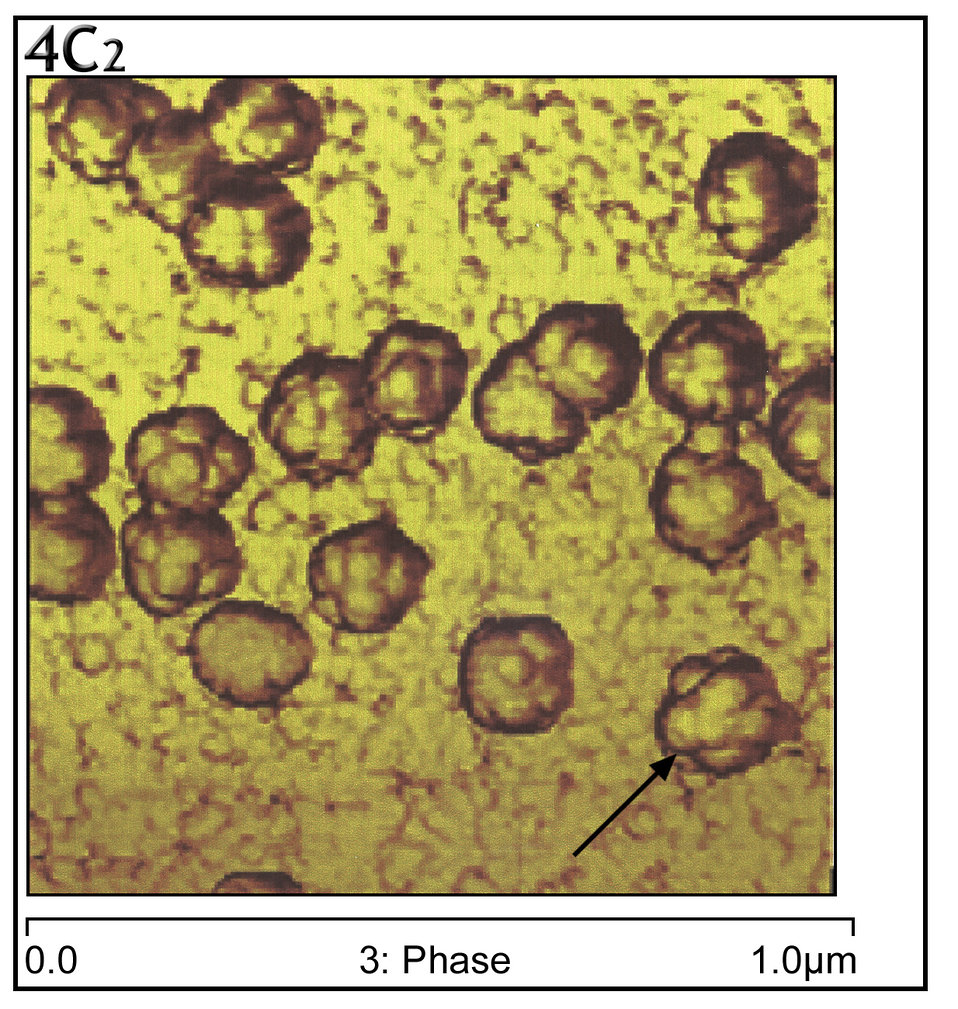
Using the NanoScope IV MultiMode� atomic force microscope, the 'knobby' virion surface structure was visualized (arrow).